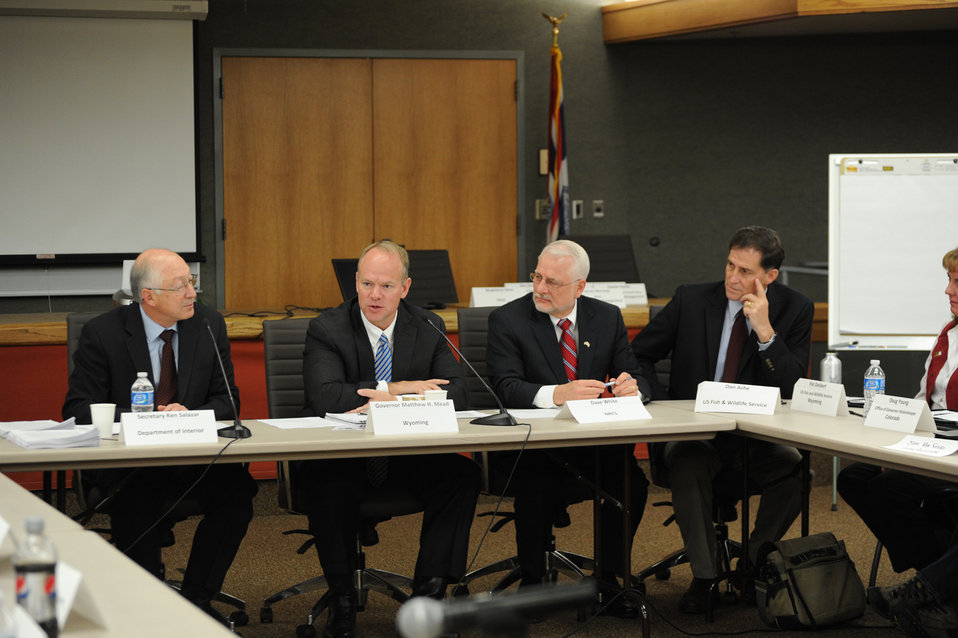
Wyoming - Sec. Salazar, Gov. Mead, and Dir. Dan Ashe

Secretary Salazar and Dan Ashe Attended a Sage Grouse Meeting in Wyoming